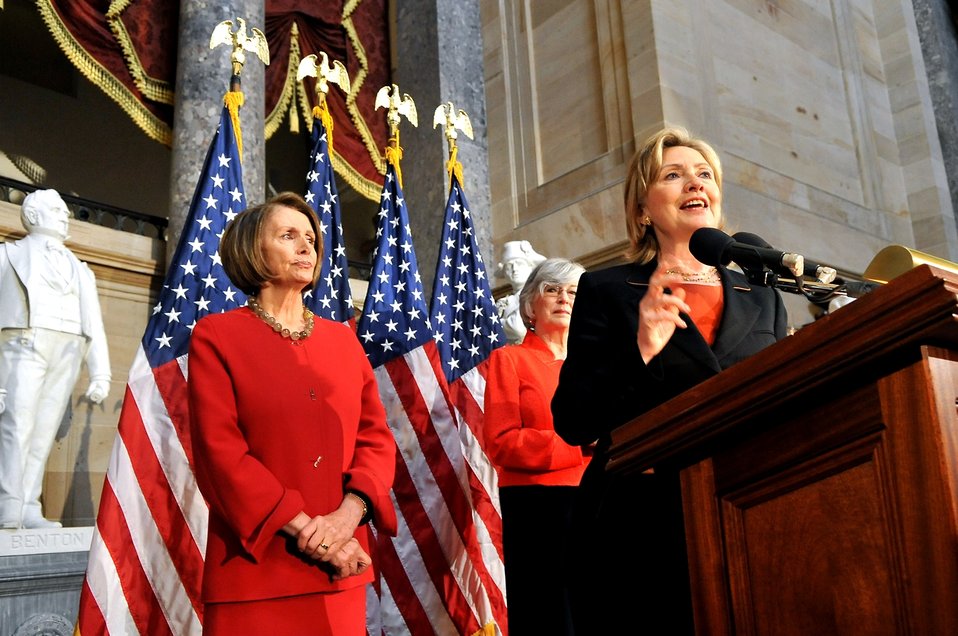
Secretary Clinton Speaks at the 30th Anniversary of the Women's History Project

U.S. Secretary of State Hillary Rodham Clinton, with House Speaker Nancy Pelosi in the backdrop, speaks at the celebration of the 30th Anniversary of the Women's History Project, where she was honored at the Statuary Hall, U.S. Capitol, Washington, DC March 25, 2010.